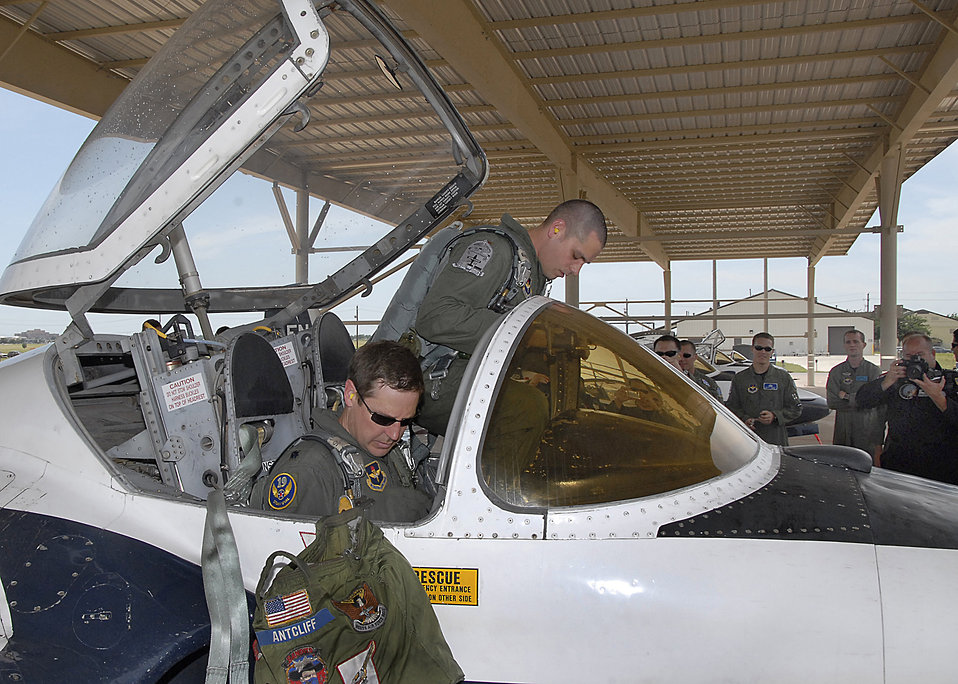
End of an era: Student flies last T-37 training mission

Lt. Col. Doug Antcliff and 2nd Lt. Trevor Kernes prepare to egress a T-37B Tweet June 17 at Sheppard Air Force Base, Texas, marking the end of the aircraft's more than 50-year service to the Air Force. More than 78,000 Air Force pilots have trained in the Tweet since 1959. Colonel Antcliff is a 19th Air Force standards and evaluation pilot. Lieutenant Kernes is a student pilot.